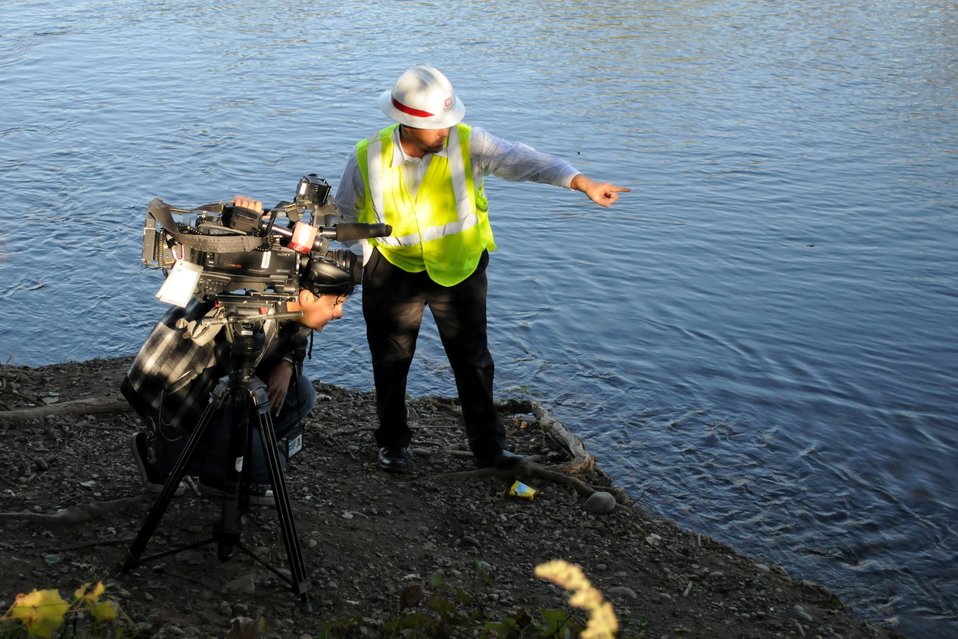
Pointing out riverbank erosion

U.S. Army Corps of Engineers Sacramento District project manager Dave Cook (right) points out riverbank erosion to CBS Television Stations news editor Rene Luna, before his TV interview Nov. 1, 2011. Cook is overseeing repairs of two erosion sites along the south bank of the American River in Sacramento, Calif. The project is part of the Sacramento River Bank Protection Project to repair erosion, levees and reduce flood risk for Sacramento.